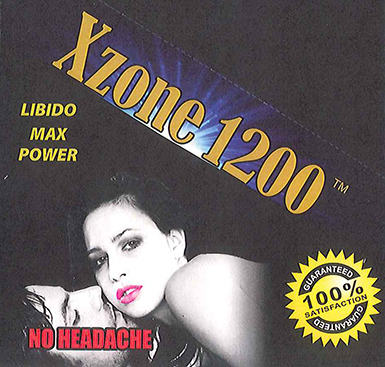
RECALLED – Dietary Supplement

April 1, 2014 – Product Recall – Nova Products, Inc. Issues Voluntary Nationwide Recall of Dietary Supplements with Undeclared Active Pharmaceutical Ingredients.